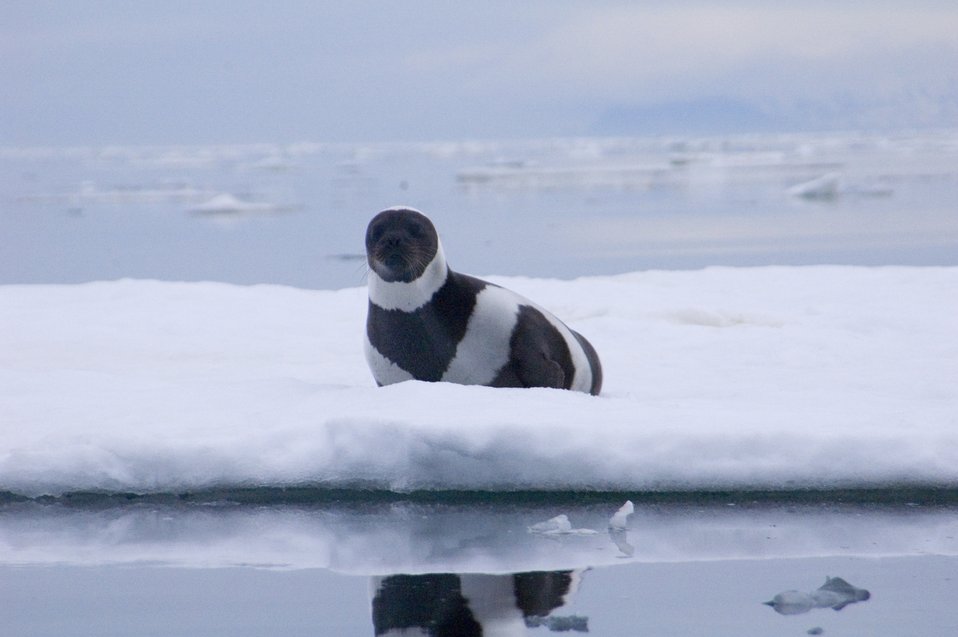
Rare adult male ribbon seal.